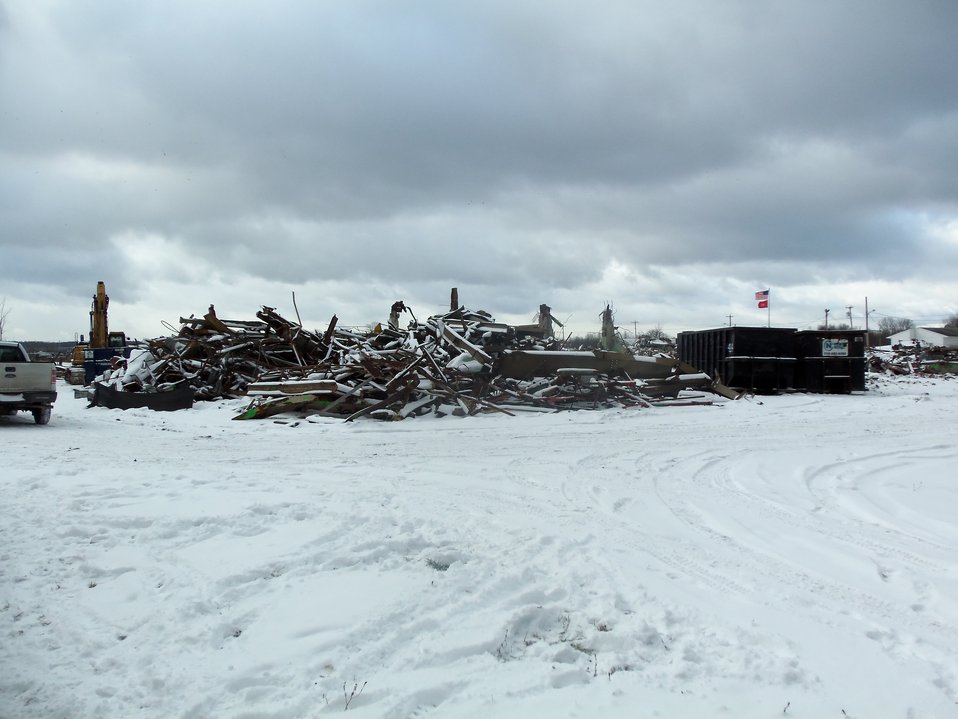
BLDG 401 REMAINS OF DEBRIS

Activities from the Niagara Falls Storage Site, which is associated with the former Lake Ontario Ordnance Works. Formerly Utilized Sites Remedial Action Program (FUSRAP), a program initiated in 1974 to identify, investigate and clean up or control sites that were part of the Nation's early atomic energy and weapons program. Activities at the sites that are eligible for FUSRAP were conducted by Manhattan Engineer District (MED) or the Atomic Energy Commission (AEC), both predecessors of the Department of Energy (DOE). The U.S. Army Corps of Engineers was assigned management of FUSRAP by Congress in 1997.